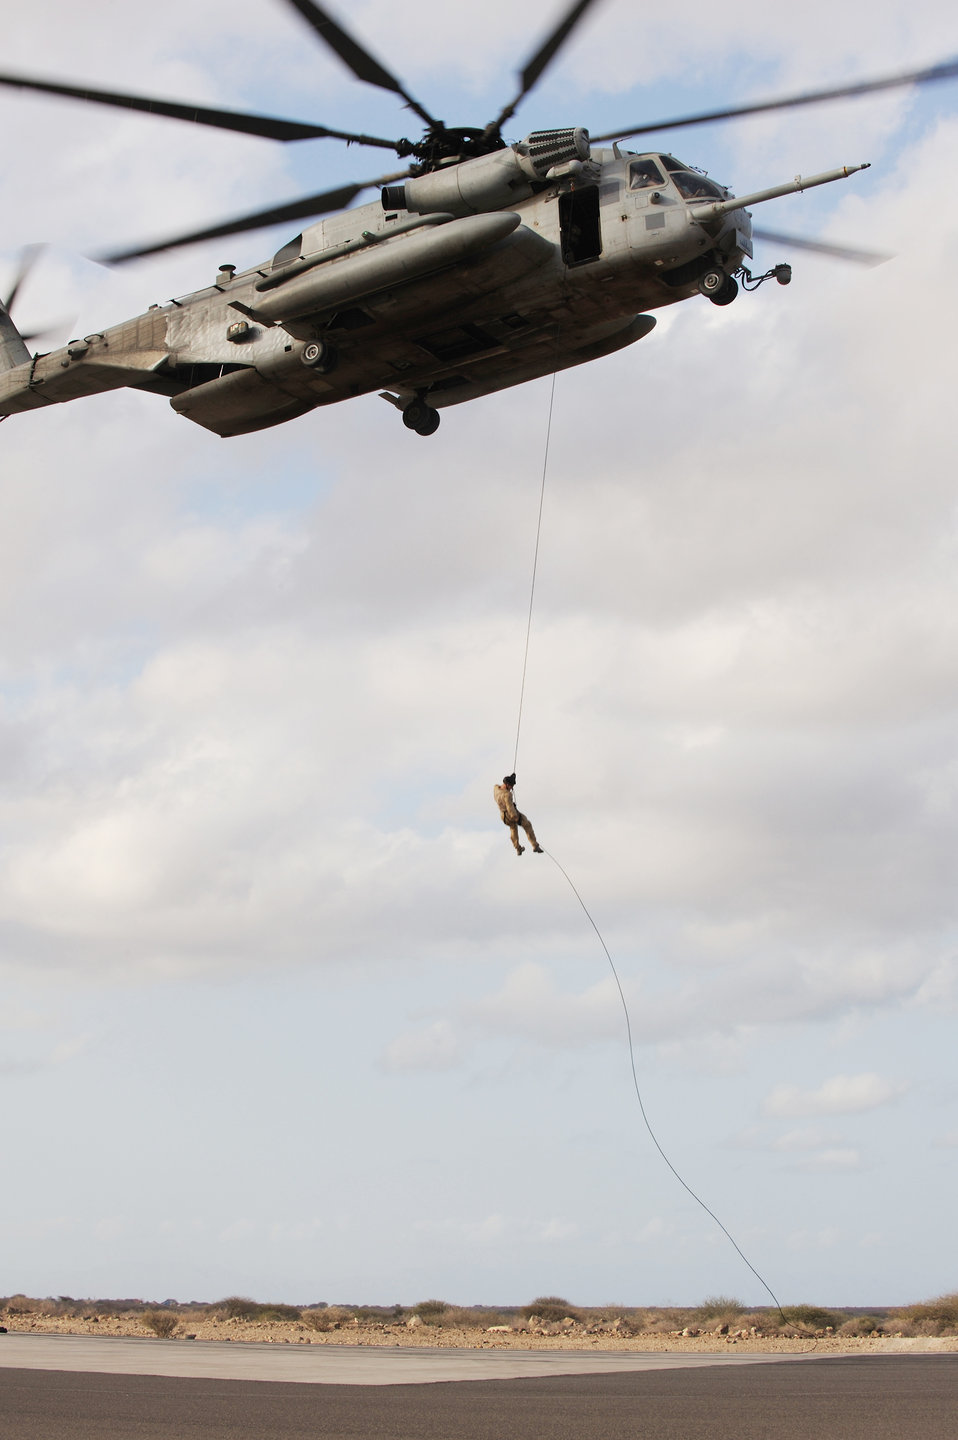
Pararescuemen hone skills in Africa

An Air Force pararescueman practices combat insertion and extraction exercise from a Marine CH-53 Sea Stallion helicopter in Djibouti, Africa, Jan. 5, 2010. The helicopter is attached to Heavy Marine Helicopter Squadron 464, and the two units are deployed to Combined Joint Task Force-Horn of Africa.